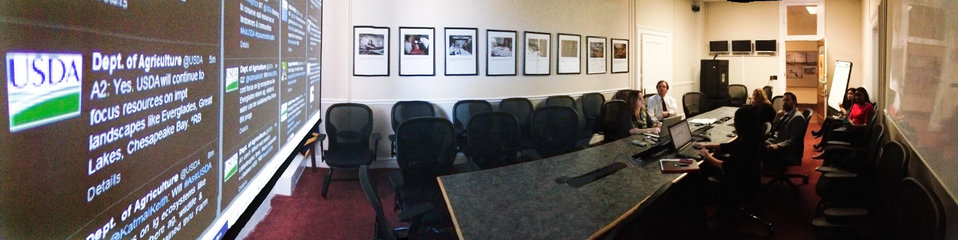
Virtual panorama of event room where Agriculture Senior Advisor to the Secretary for Environment and Climate Change Robert Bonnie (white shirt) hosts a live Virtual Office Hours session on Twitter, in Washington, D.C. on Thursday, November 29, 2012. Supporting the event are U.S. Department of Agriculture Office of Communications Director of Web Communications Amanda Eamich (left), Deputy Press Secretary Stephanie Chan (right, at computer), Forest Service Media Relations Officer Lawrence Chambers, and Natural Resources Conservation Service Internal/External Communications Team Lead Jody Holzworth (at table). Online questions about U.S. Department of Agriculture's (USDA) record on conservation achievements and efforts to reconnect Americans to the great outdoors were answered during the event. Questions were submitted live and in advance to the @USDA Twitter account using the hashtag #AskUSDA.